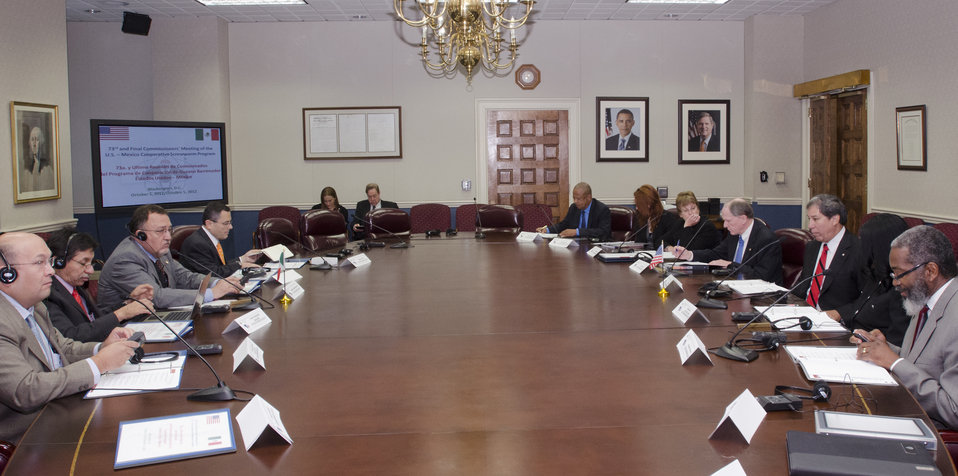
The U.S. Department of Agriculture’s (USDA) 73rd and Final Commissioners Meeting of the U.S. – Mexico Cooperative Screwworm Program meets in the Williamsburg room at USDA in Washington, D.C. on Oct. 5, 2012.